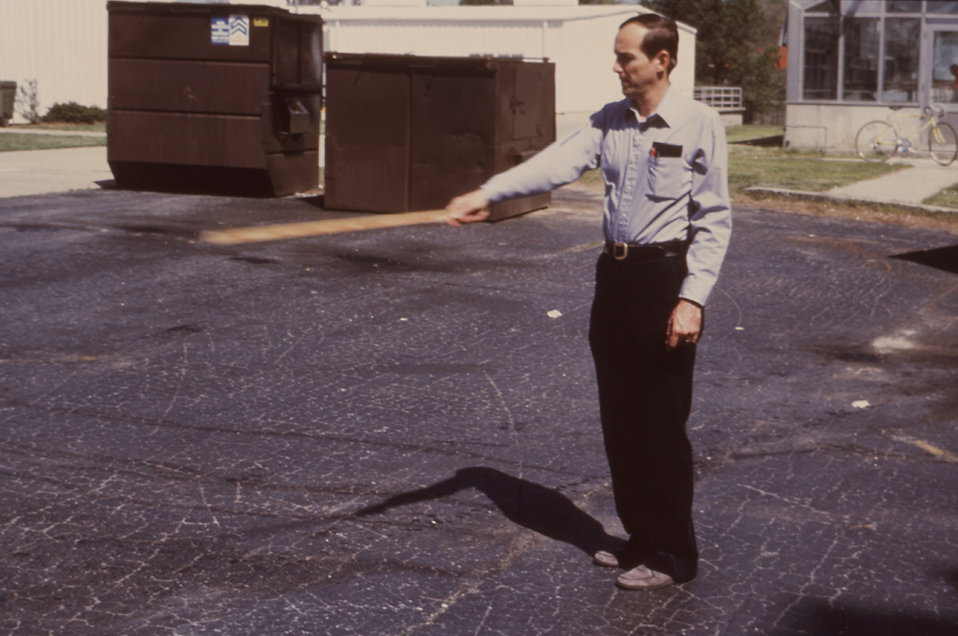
This 1981 photograph depicted a field technician as he swung a yardstick through an insecticide spray in the correct manner used when one is quantitatively measuring the amount of insecticide dispersed from an ultra low volume (ULV) fogger.